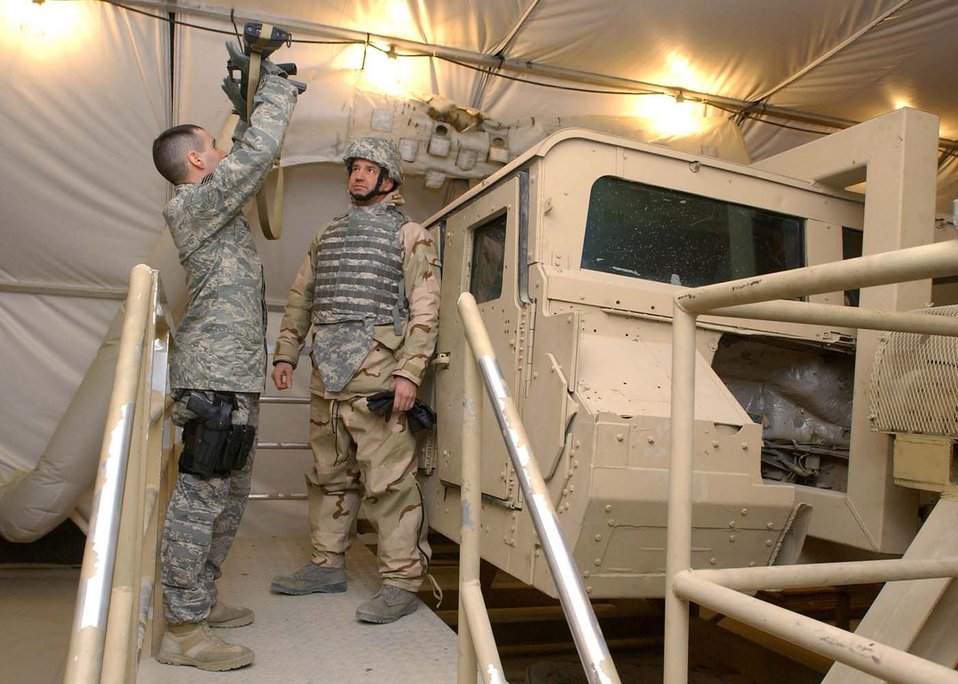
Airmen train with Humvee simulator

Staff Sgt. Michael DeJesus shows Tech. Sgt. Aaron Sholar how to balance while upside down with his weapon during Humvee Egress Rollover Training. The training teaches Airmen how to exit a humvee in water or at night while the vehicle is upside down. Sergeant DeJesus is the 455th Expeditionary Security Forces Squadron NCO in charge of physical security and his home unit is the 88th Security Forces Squadron, Wright-Patterson Air Force Base, Ohio, and Sergeant Sholar's is the 90th Aircraft Maintenance Unit at Elmendorf AFB, Alaska.